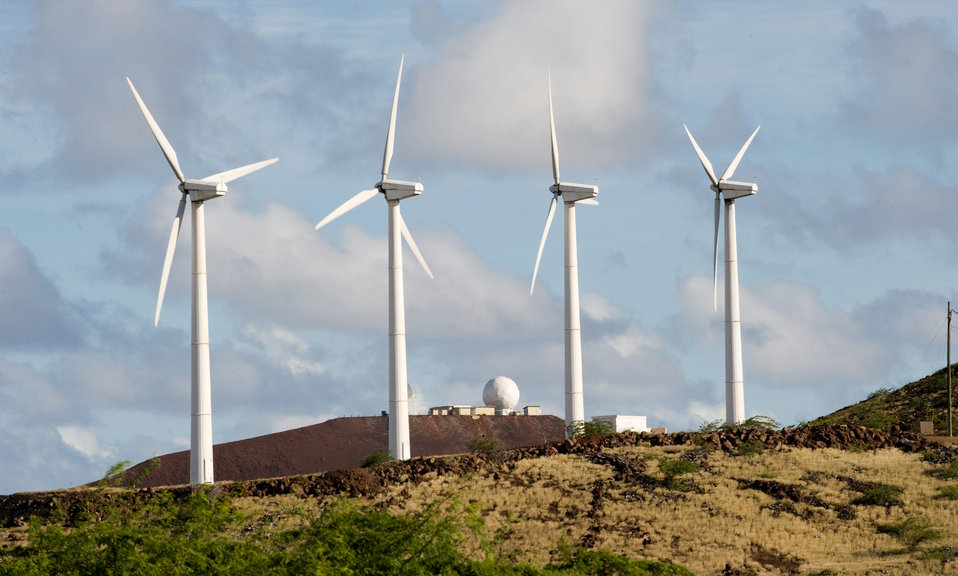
Ascension Island Green Way

On rugged lave rock terrain these four 225 kW wind turbines are the first phase of a six turbine site of the 45th Operations Group, Detachment 2, at Ascension Auxiliary Airfield (AAF), South Atlantic Ocean. Behind them, one of the facilities they help power, the TAA-3C-1 and TAA-3C-2 telemetry systems on South Gannett Hill on June 28, 2009. The wind turbines work in parallel with low-load diesel generators powering the airfield, Space Command sites and facilities, and a royal air force airfield facility on the island. Ascension AAF's award winning economical self-sufficiency solutions also includes drinking water production and waste water treatment.